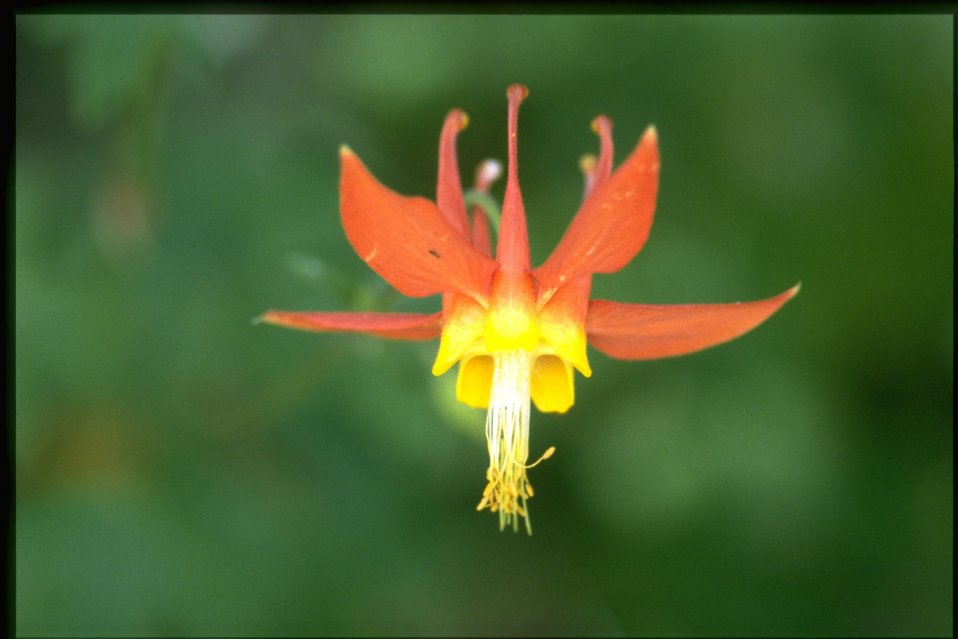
Closeup shot of Aquilegia formosa.